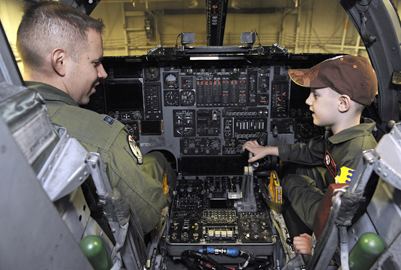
Best day ever

Capt. Chris Williams shows Aric Lassegard the flight controls aboard a B-1B Lancer Jan. 13, 2011, at Ellsworth Air Force Base, S.D. Aric was treated as an honorary member of the 34th BS as part of the Aircrew for a Day program. Captain Williams is a 34th Bomb Squadron pilot.